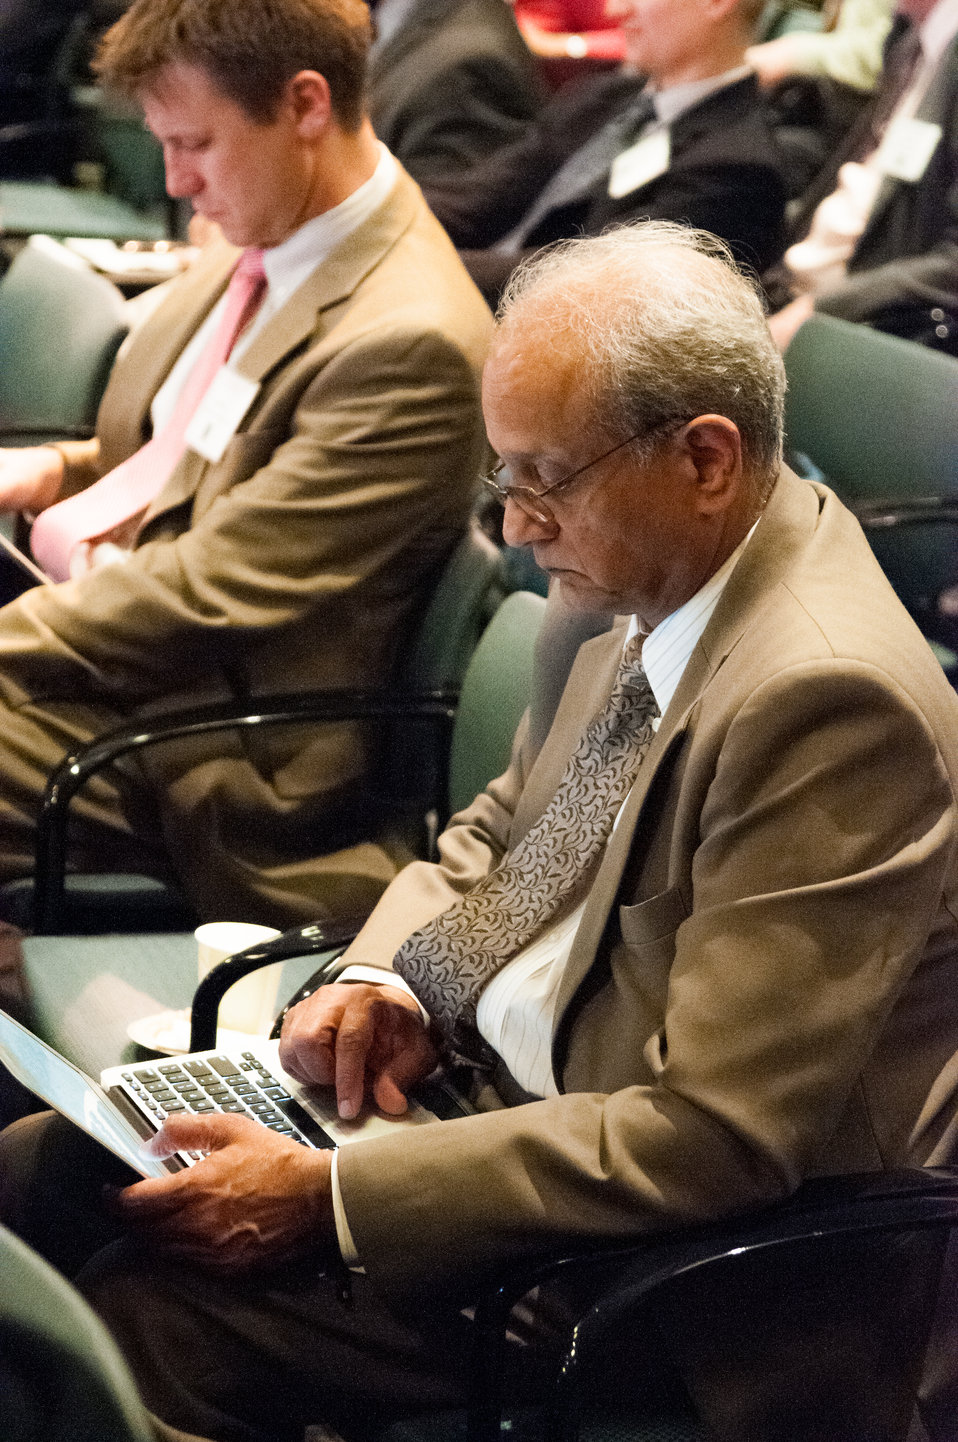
U.S. Department of Agriculture (USDA) National Institute of Food and Agriculture (NIFA) Director Dr. Sonny Ramaswamy takes notes during the second day of the two day G-8 International Conference on Open Data for Agriculture in Washington, D.C. on Tuesday, Apr. 30, 2013. The conference launched a new 'virtual community' as part of a suite of actions, including the release of new data that the U.S. is taking to give farmers and ranchers, scientists, policy makers and other members of the public easy access to publicly funded data to help increase food security and nutrition.